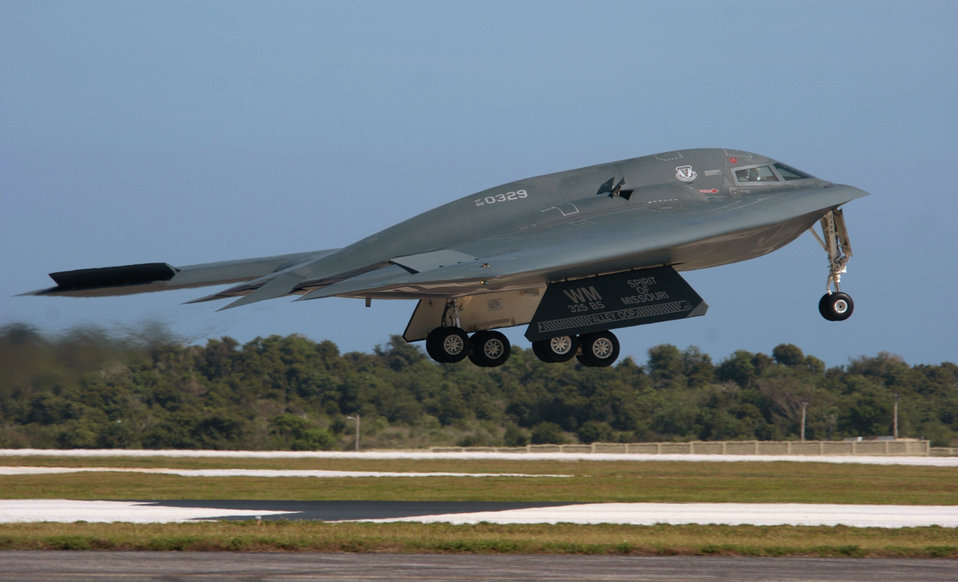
Airmen help improve B-2 aircraft maintenance in Guam

ANDERSEN AIR FORCE BASE, Guam -- A B-2 Spirit bomber, from the 509th Bomb Wing at Whiteman Air Force Base, Mo., takes off for a mission during an air and space expeditionary force deployment here. The B-2s deployed here Feb. 25 to provide U.S. Pacific Command officials a continuous bomber presence in the Asia-Pacific region, enhancing regional security and the U.S. commitment to the Western Pacific. Bomber aircraft have had an ongoing presence on the island since February 2004.